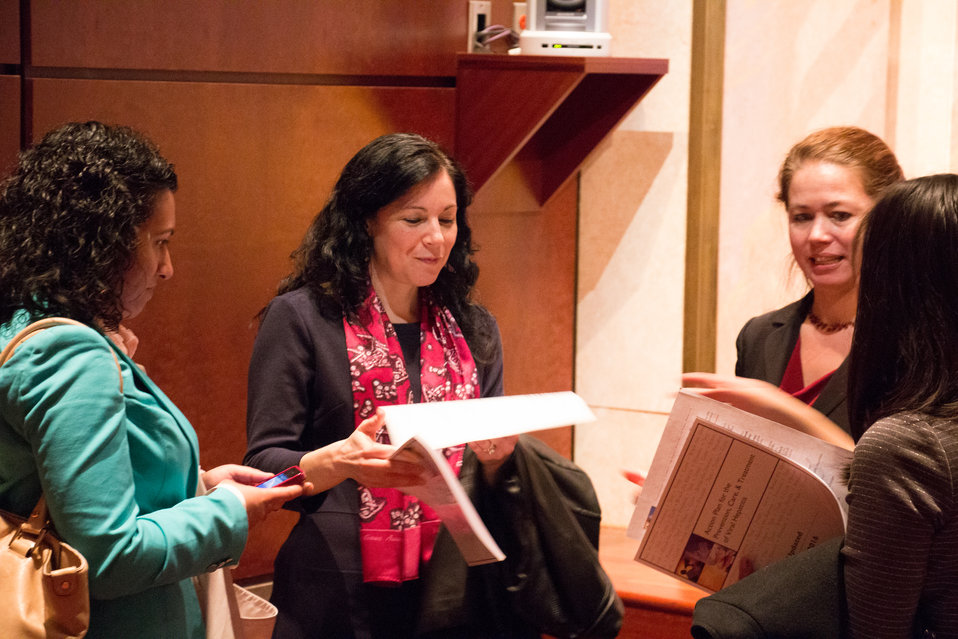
VHAP Launch (507 of 511)